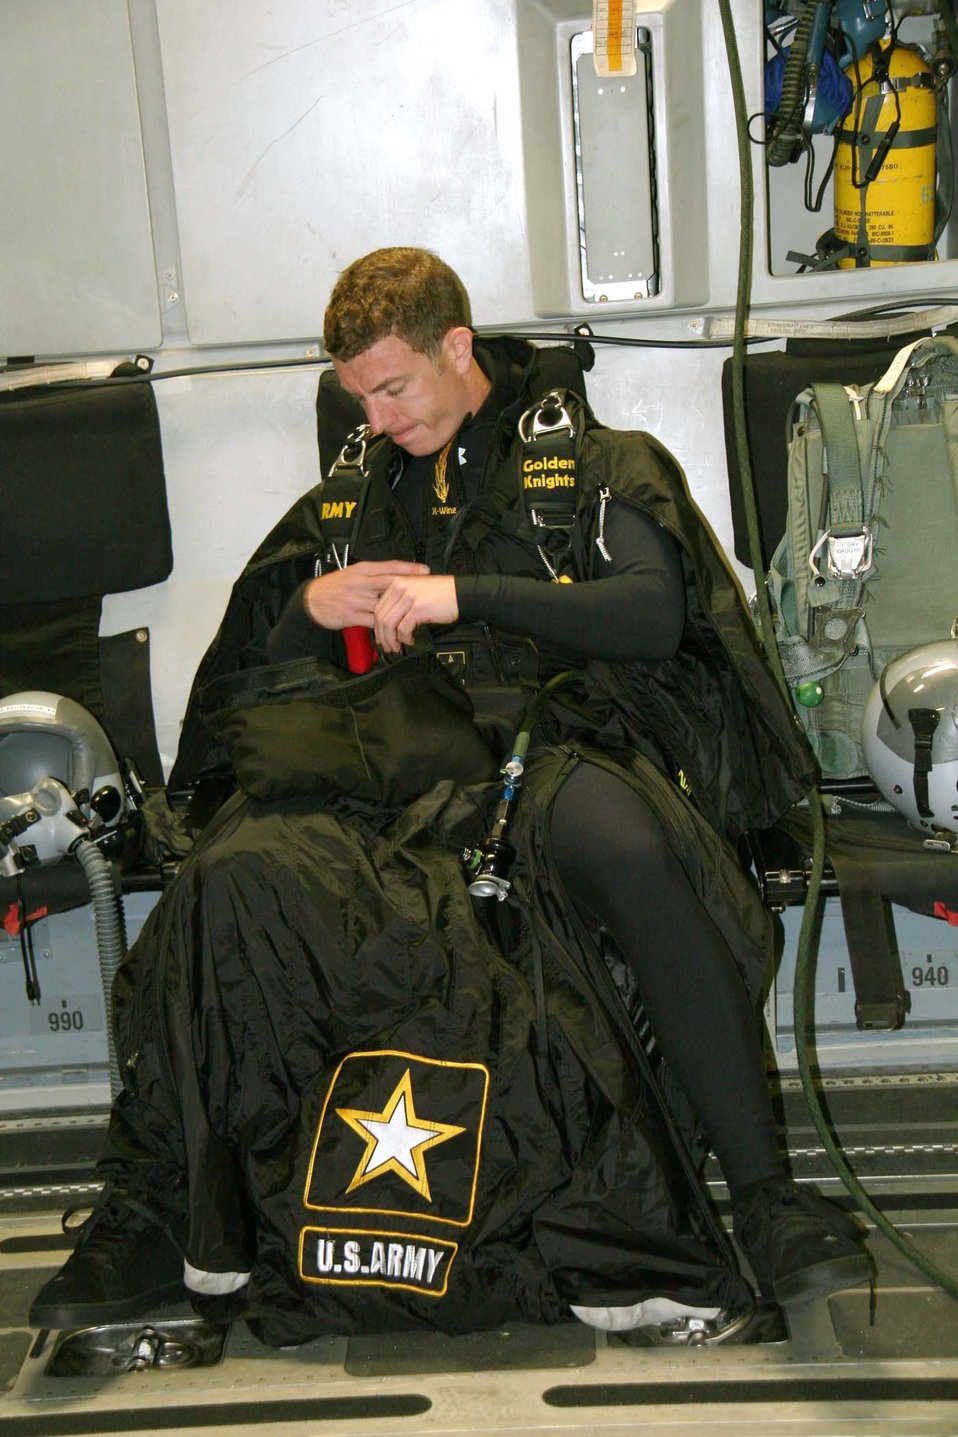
Golden Knights await record

Army Staff Sgt. Ben Borger, of the Army parachute team the Golden Knights checks over his wing-suit before attempting to set a new world wing-suit distance record April 14, 2010, over Altus Air Force Base, Okla.